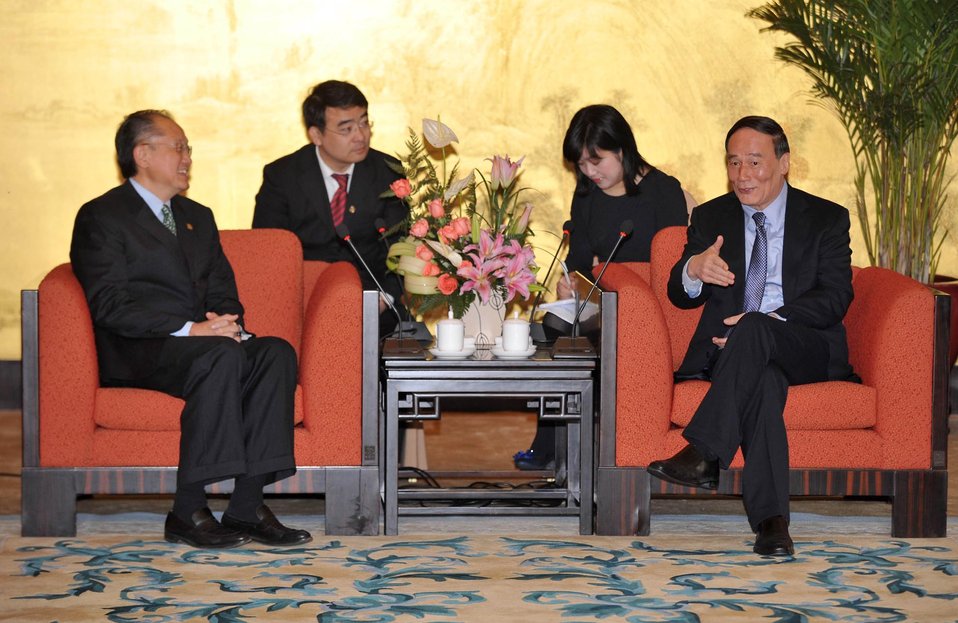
Dr. Jim Yong Kim meeting with Chinese Vice Premier Wang Qishan

Dr. Jim Yong Kim, U.S. Nominee for the World Bank Presidency, met on March 31, 2012 with Chinese Vice Premier Wang Qishan in Shaoxing, China. Dr. Kim and Vice Premier Wang discussed how the World Bank can promote the rapid development and poverty alleviation achieved by China and South Korea throughout the developing world. Dr. Kim also reiterated his belief in the importance of a strong voice for emerging economies in the World Bank. China is the second stop on Dr. Kim's global listening tour, as he solicits priorities and ideas for the future of the World Bank from around the world.